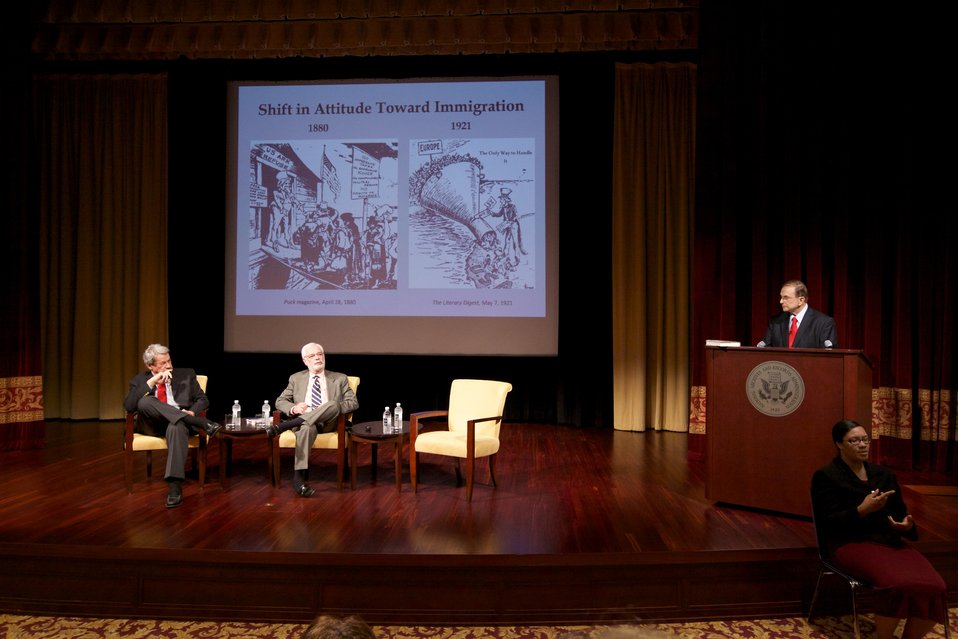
A Nation of Immigrants: How They Shaped America